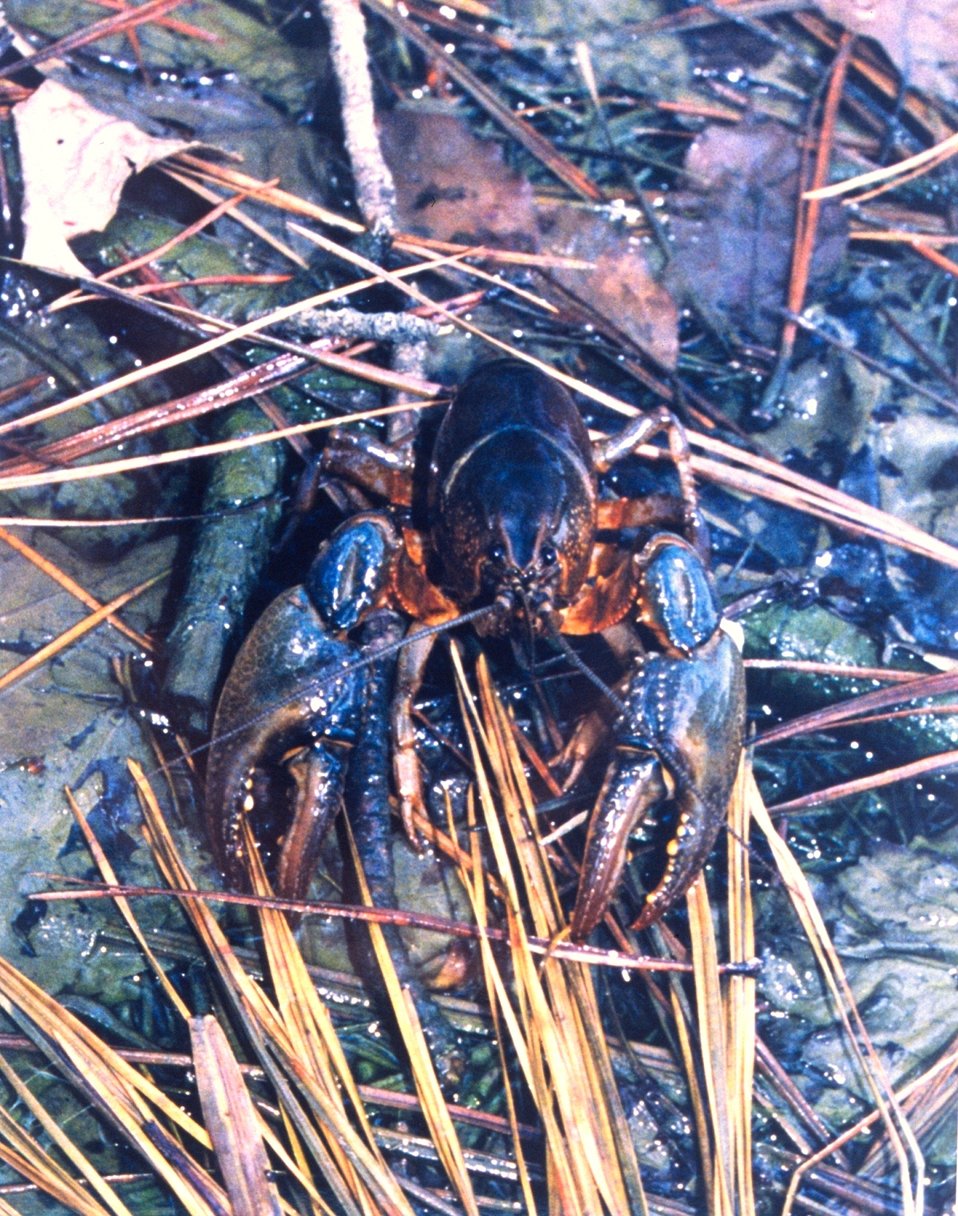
Crayfish found in a salt water pond near the Patuxent River.